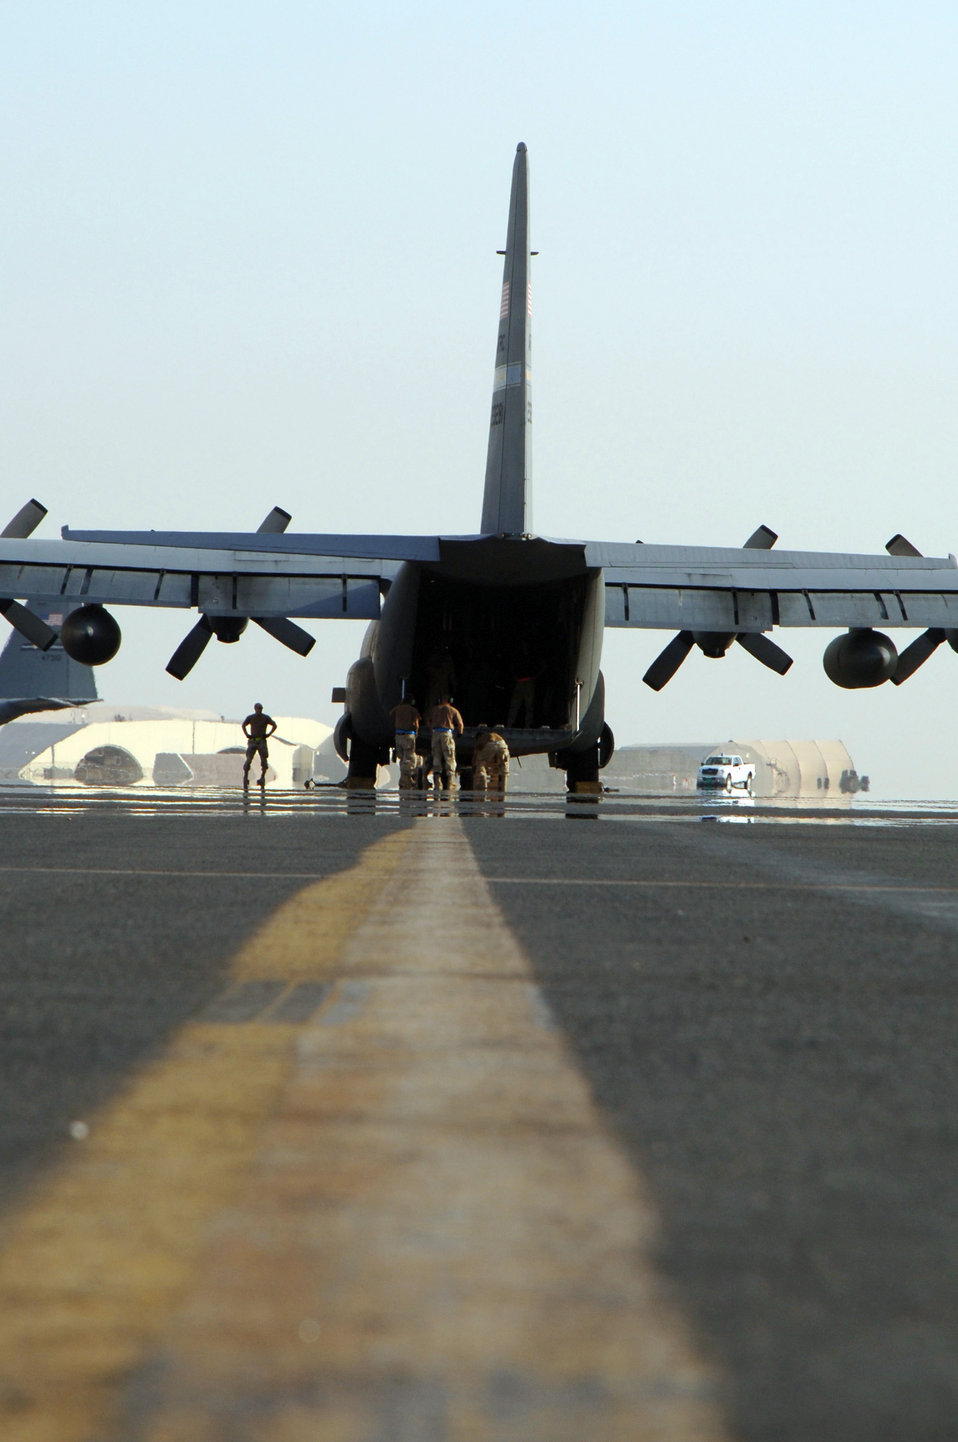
Deployed Hercules

SOUTHWEST ASIA (AFPN) --- A C-130 Hercules from the Niagara Falls Joint Air Reserve Station in New York prepares to receive cargo at a deployed location Feb. 5.